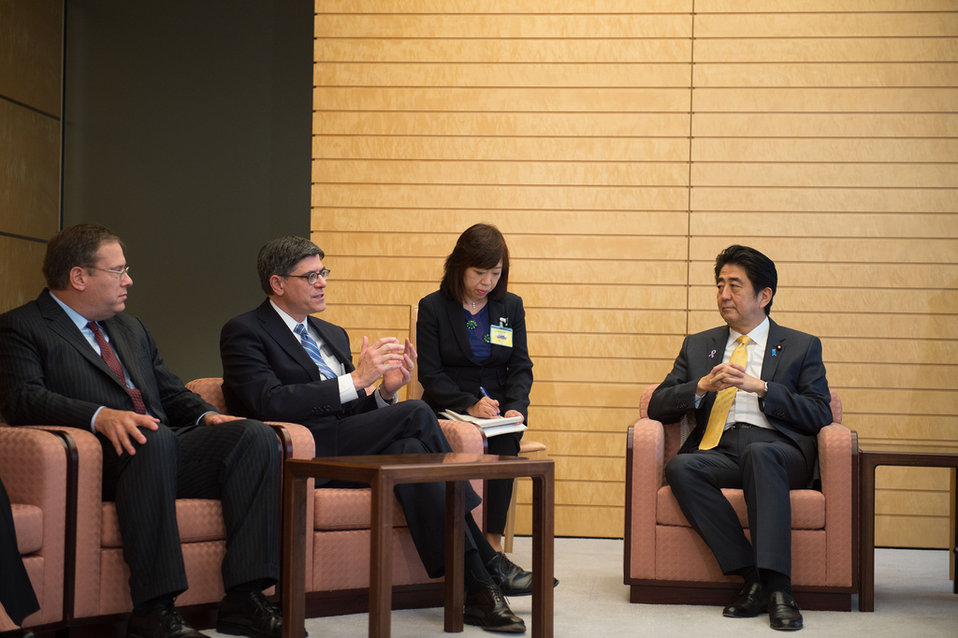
Secretary Lew meets with Japan Prime Minister Shinzo Abe

November 12, 2013 - Secretary Lew's first stop during his week-long trip to Asia was in Tokyo, where he met with senior government officials including Japanese Prime Minister Shinzo Abe (right).